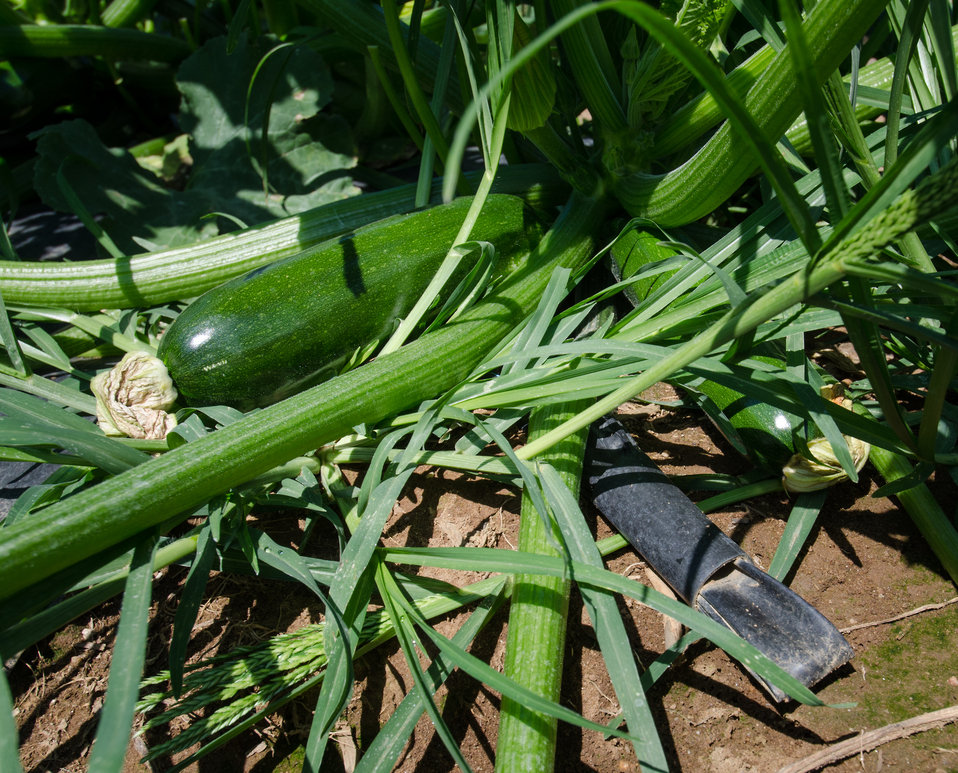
Kirby Farms third-generation family farm in Mechanicsville, VA, uses micro irrigation (drip watering) and plastic mulch (row covering) to efficiently grow green zucchini squash, on Friday, Sept 20, 2013. Water is pumped through a filtration/regulator system to flexible distribution pipes and hard connectors. Emitter hoses can be driven in where needed. Pressurized hoses emit water at a very slow rate near the base of the plants. Computers or timers provide additional controls. A micro irrigation system, also known as drip or trickle irrigation, is used to water directly to the plant root zone utilizing surface or subsurface applicators. For more information please see www.nrcs.usda.gov/Internet/FSE DOCUMENTS/nrcs141p2 024038...
Plastic sheeting is a form of mulch. It conserves soil moisture and reduces energy
use associated with irrigation, moderates soil temperature, provide erosion control, suppresses weed growth, facilitates the establishment of vegetative cover, improves soil quality, and reduces airborne particulates.